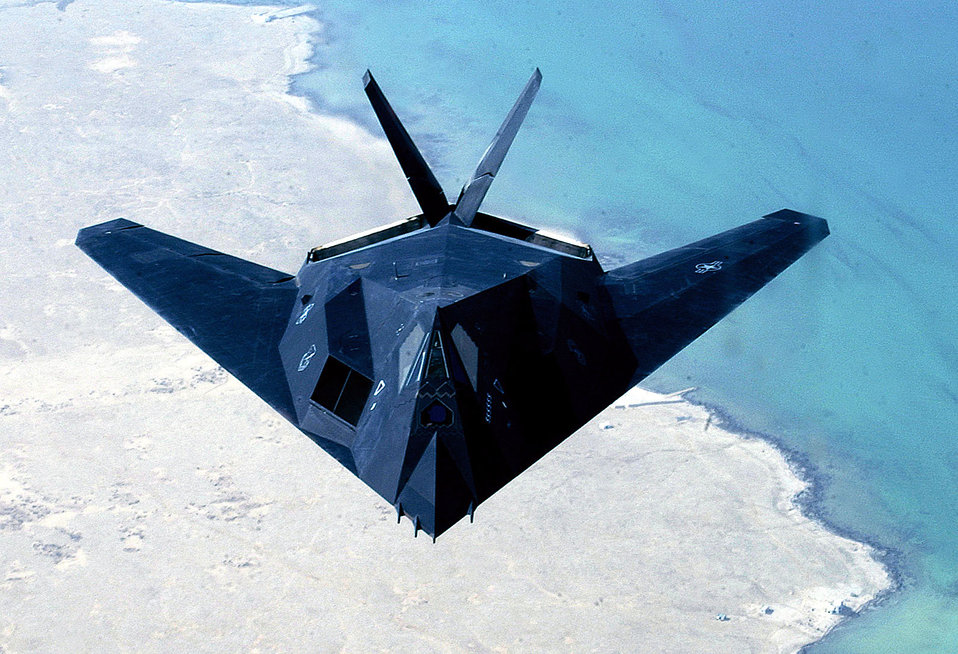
Nighthawk achieves 100 percent mission capable

The F-117 Nighthawk penetrates high-threat airspace and uses laser-guided weapons against critical targets.